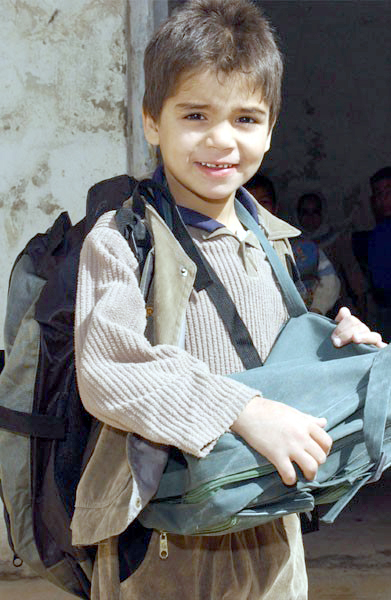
'Win the Peace' coalition delivers hope for future

NASIRIYA, Iraq -- A school boy selects a backpack donated by 380th Air Expeditionary Wing Airmen. More than 200 backpacks filled with school supplies and hygiene products were donated.